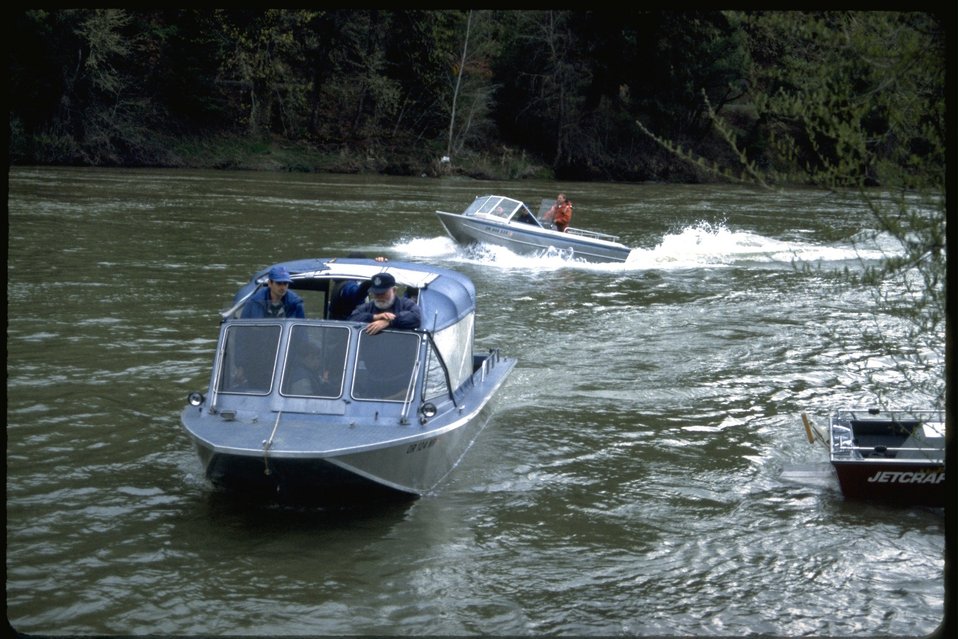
Boats cruising through a small lake or in a large river.